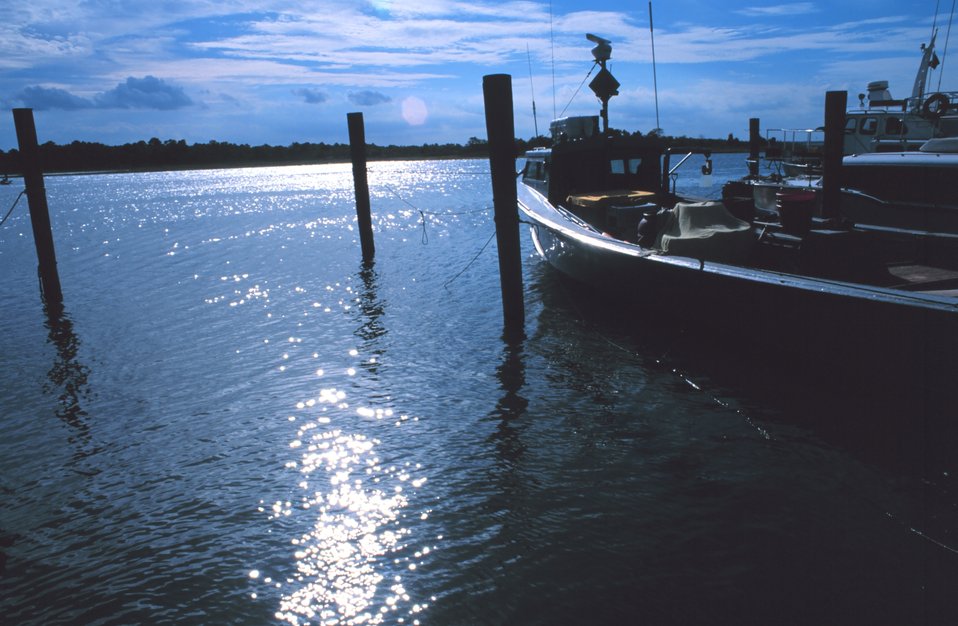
A commercial lobster boat tied up in the late afternoon sunshine